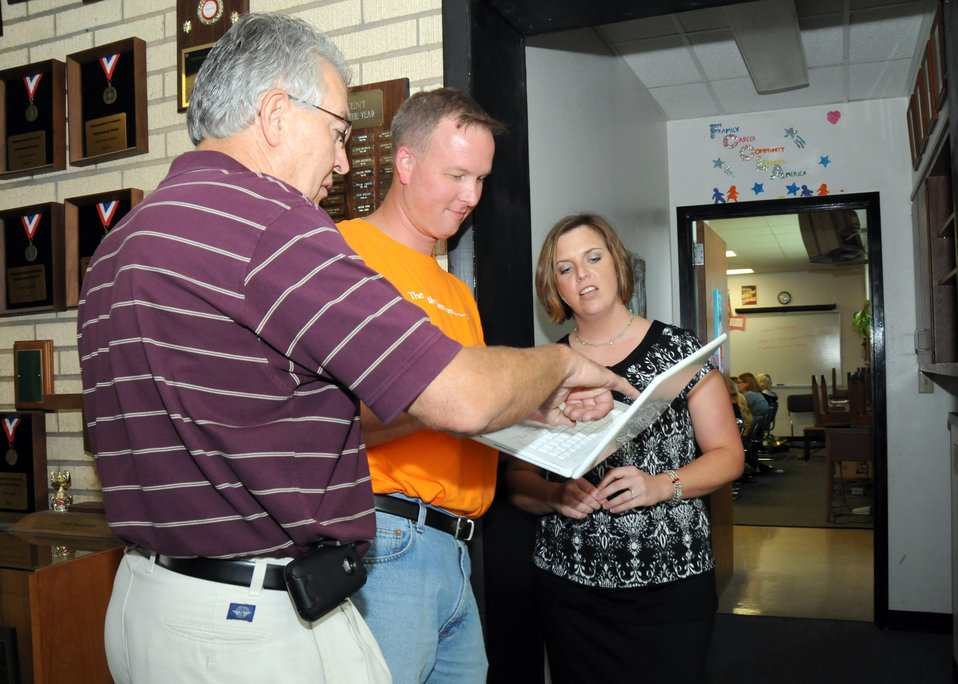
The Principal of Crescent High School, the IT instructor, and teacher disuss programs that can be used to assist students in their learning.